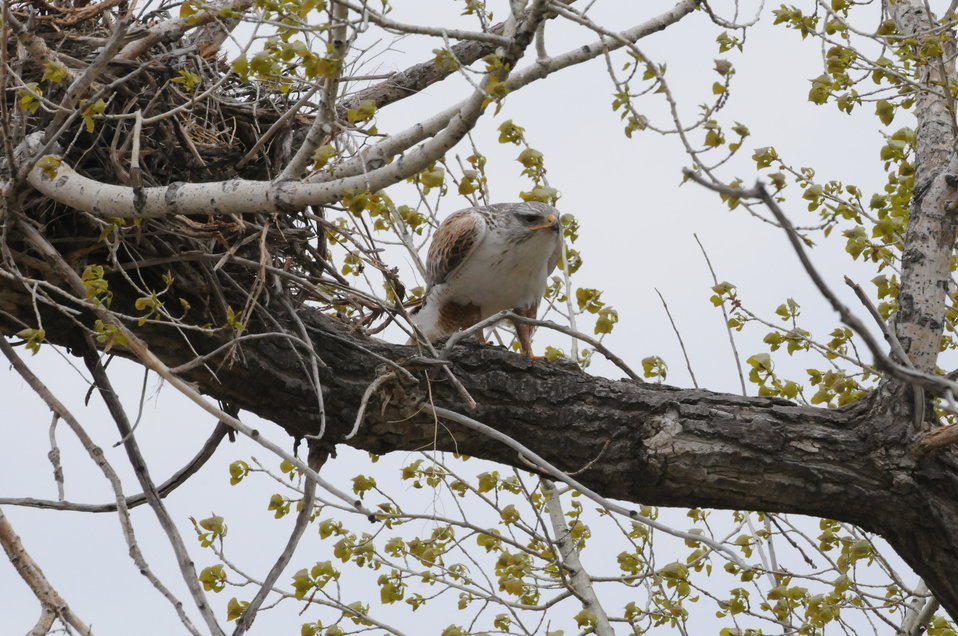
Ferruginous Hawk at nest in Canada. Supported by the Neotropical Migratory Bird Conservation Act. Credit: WCS

Note: This photo was taken in Canada. Flickr geolocation point is incorrect. Specific location unknown.